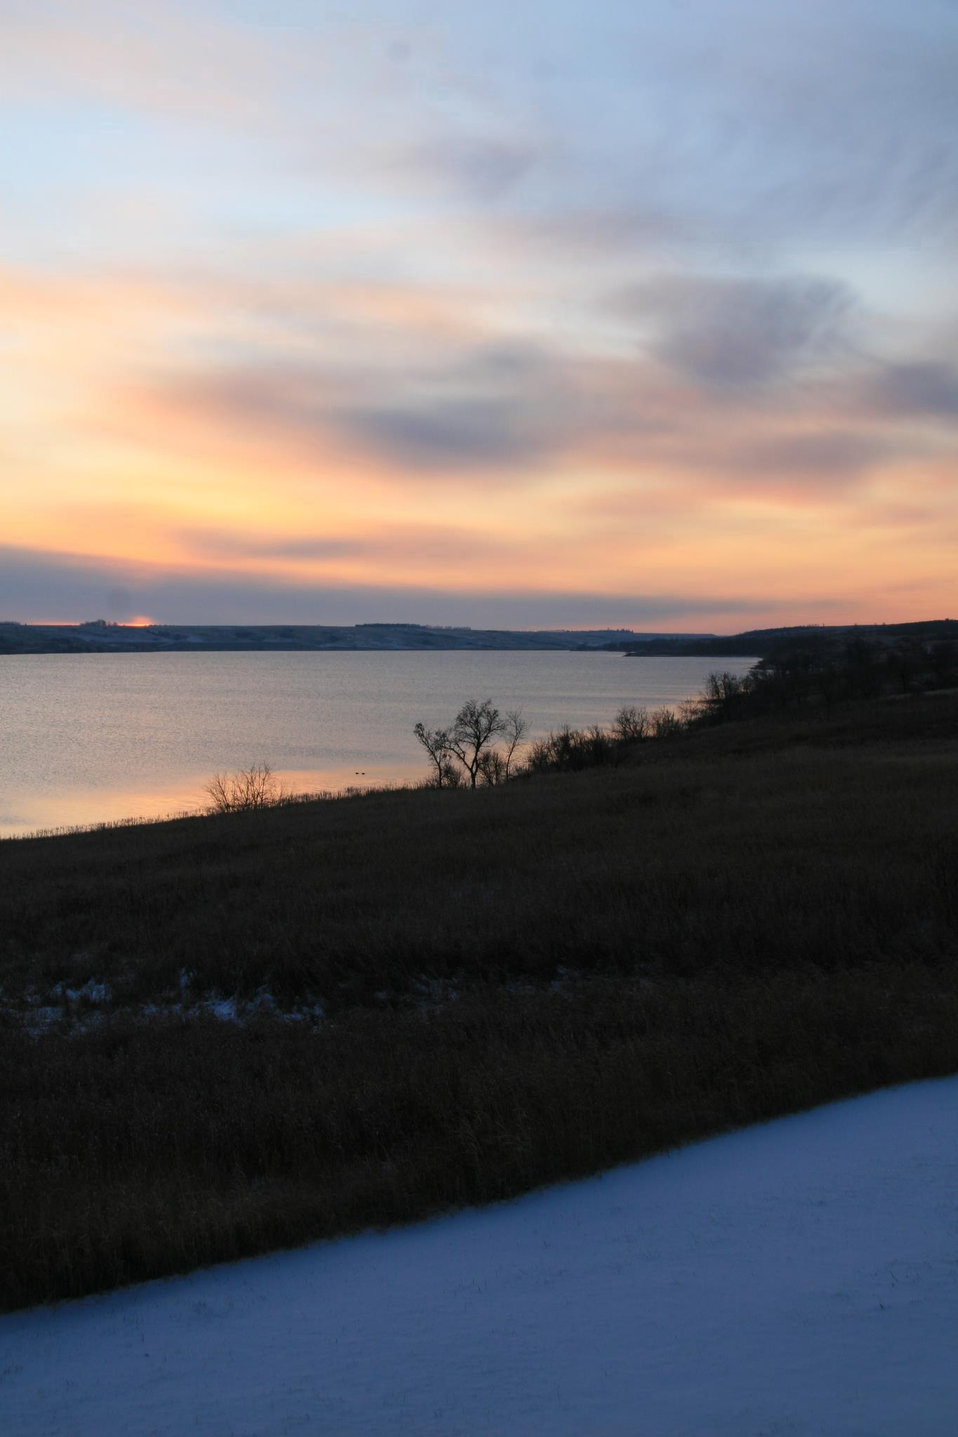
first snow at Des Lacs NWR

Des Lacs National Wildlife Refuge, ND
Nov. 7, 2011